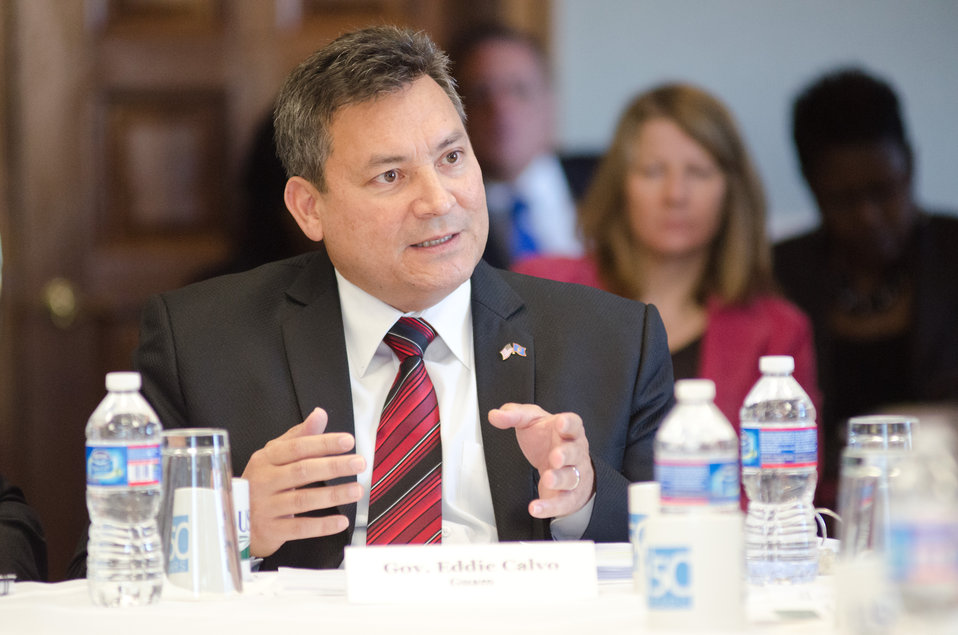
Guam - Governor Eddie Calvo presents issues that are important his territory, to Agriculture Secretary Tom Vilsack, Interior Secretary Ken Salazar, Environmental Protection Agency Administrator Lisa Jackson, and Council on Environmental Quality Chair Nancy Sutley, in the Lincoln Room, of the United States Department of Agriculture headquarters, in Washington, D.C., on Sunday, February 26, 2012.